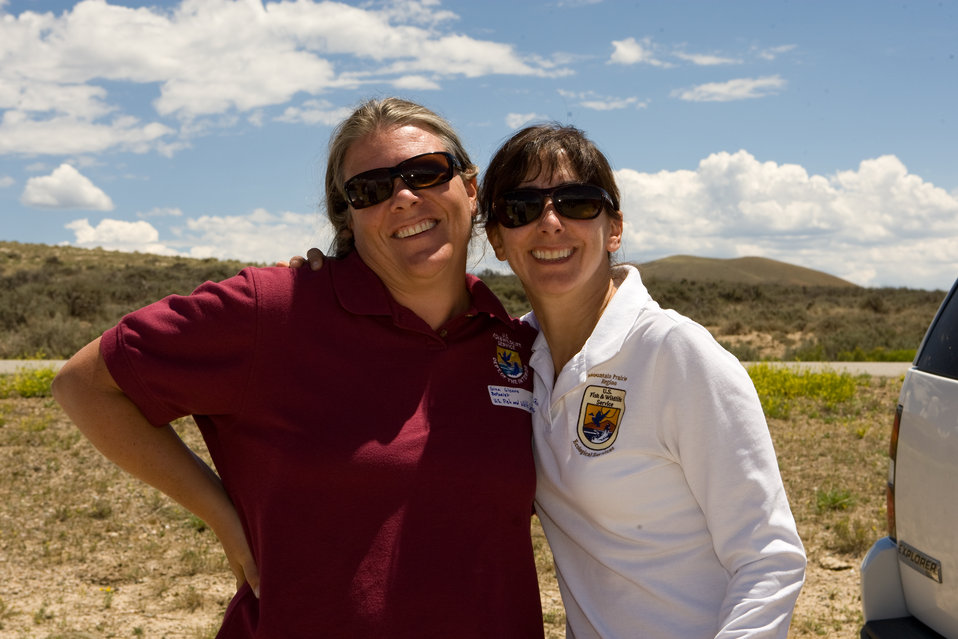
Colorado Rare Plant Conservation Initiative

The Colorado Rare Plant Conservation Initiative (RPCI) is a partnership of 23 statewide and regional agencies, private organizations, and academic institutions working to conserve 121 rare plants in Colorado. As part of these efforts the group developed the Colorado Rare Plant Conservation Strategy, developed Best Management Practices to reduce energy development impacts, addressed climate change, and developed focused strategies for the conservation of individual species at eight priority landscapes. The group has also worked to coordinate volunteer efforts for plant conservation across the state.